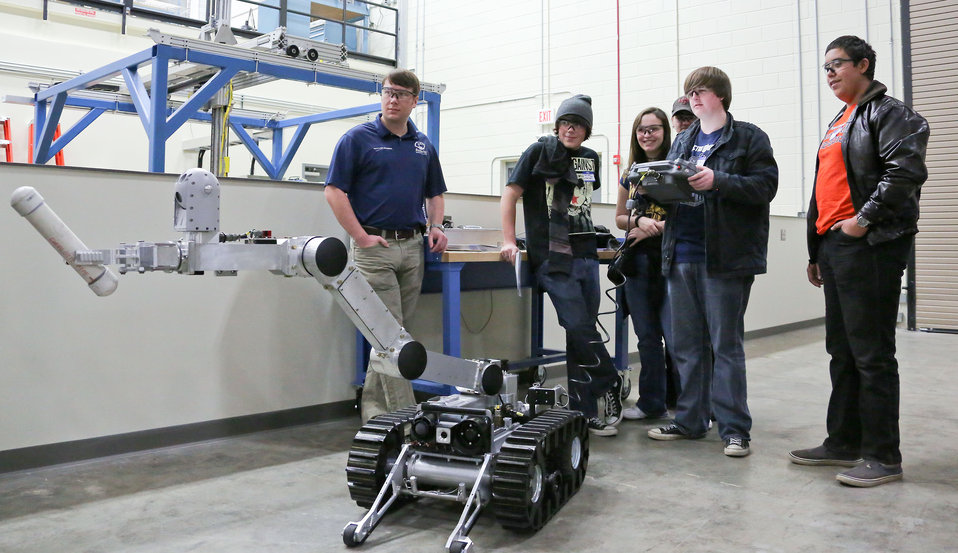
Students try manipulating a Remotec robotic system at a kickoff event for the 2013 First Robotics Competition at Oak Ridge National Laboratory's Manufacturing Demonstration Facility.